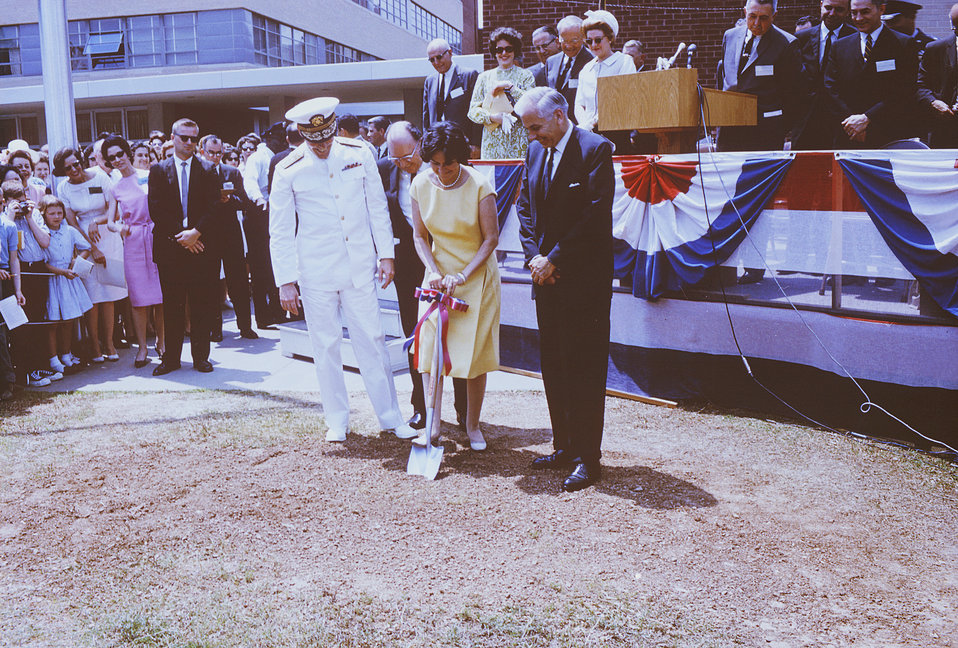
This historic 1964 image depicted former First Lady, Claudia Alta 'Lady Bird' Taylor Johnson, as she was wielding a shovel, while attending a Centers for Disease Control outdoor ground-breaking ceremony, which would lead to the construction of the former Auditorium B, which no longer exists.